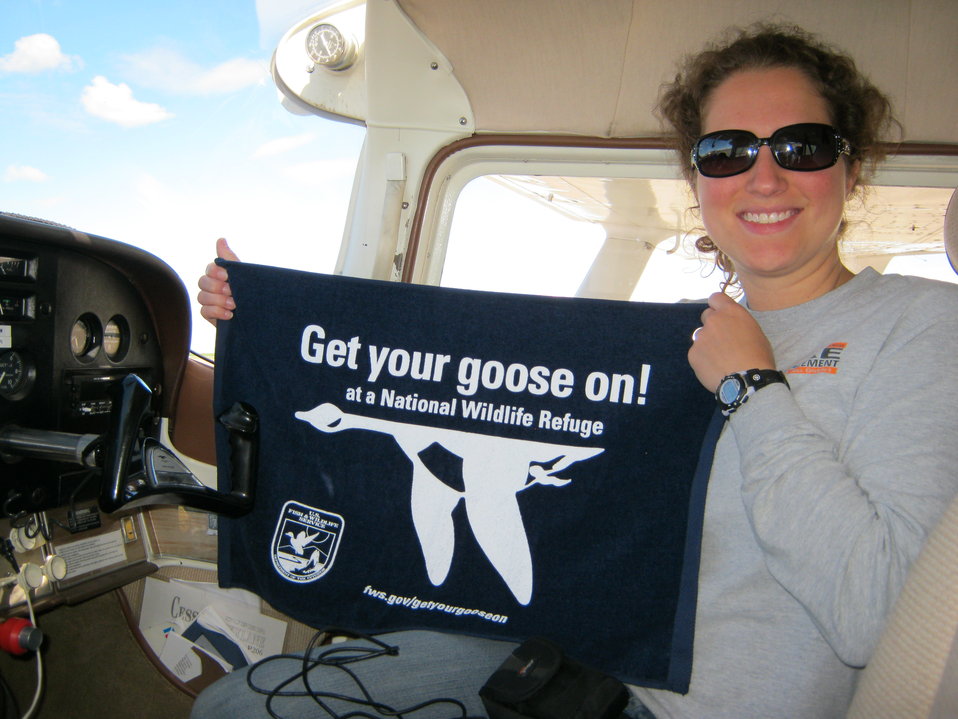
Get Your Goose On!

The goose takes flight at Benton Lake National Wildlife Refuge